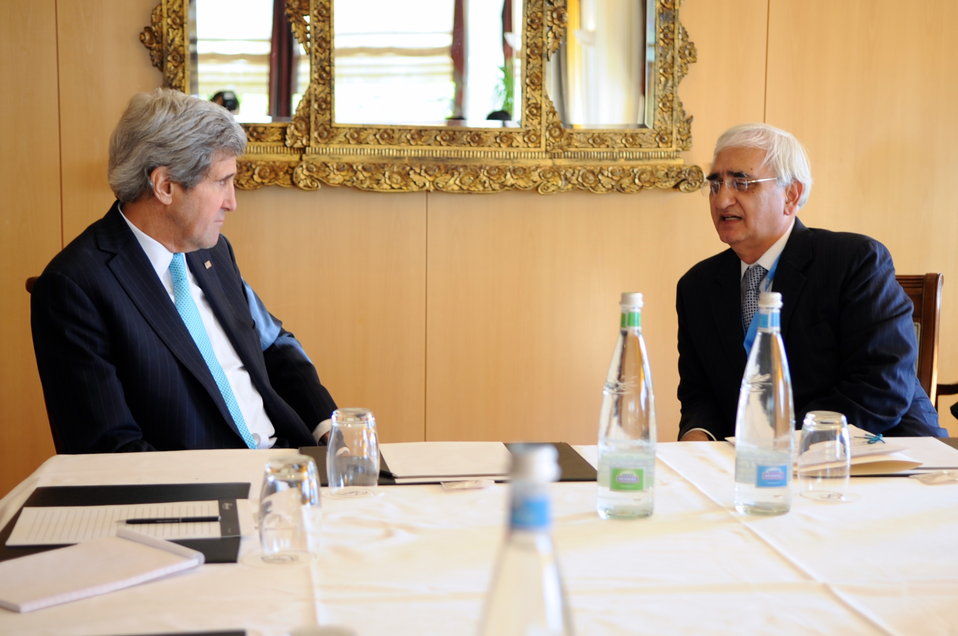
Secretary Kerry, Indian Foreign Minister Khurshid Meet on Sidelines of Geneva II Conference

U.S. Secretary of State John Kerry and Indian Foreign Minister Salman Khurshid chat during a one-on-one meeting during a break in the Geneva II conference in Montreux, Switzerland, on January 22, 2014.